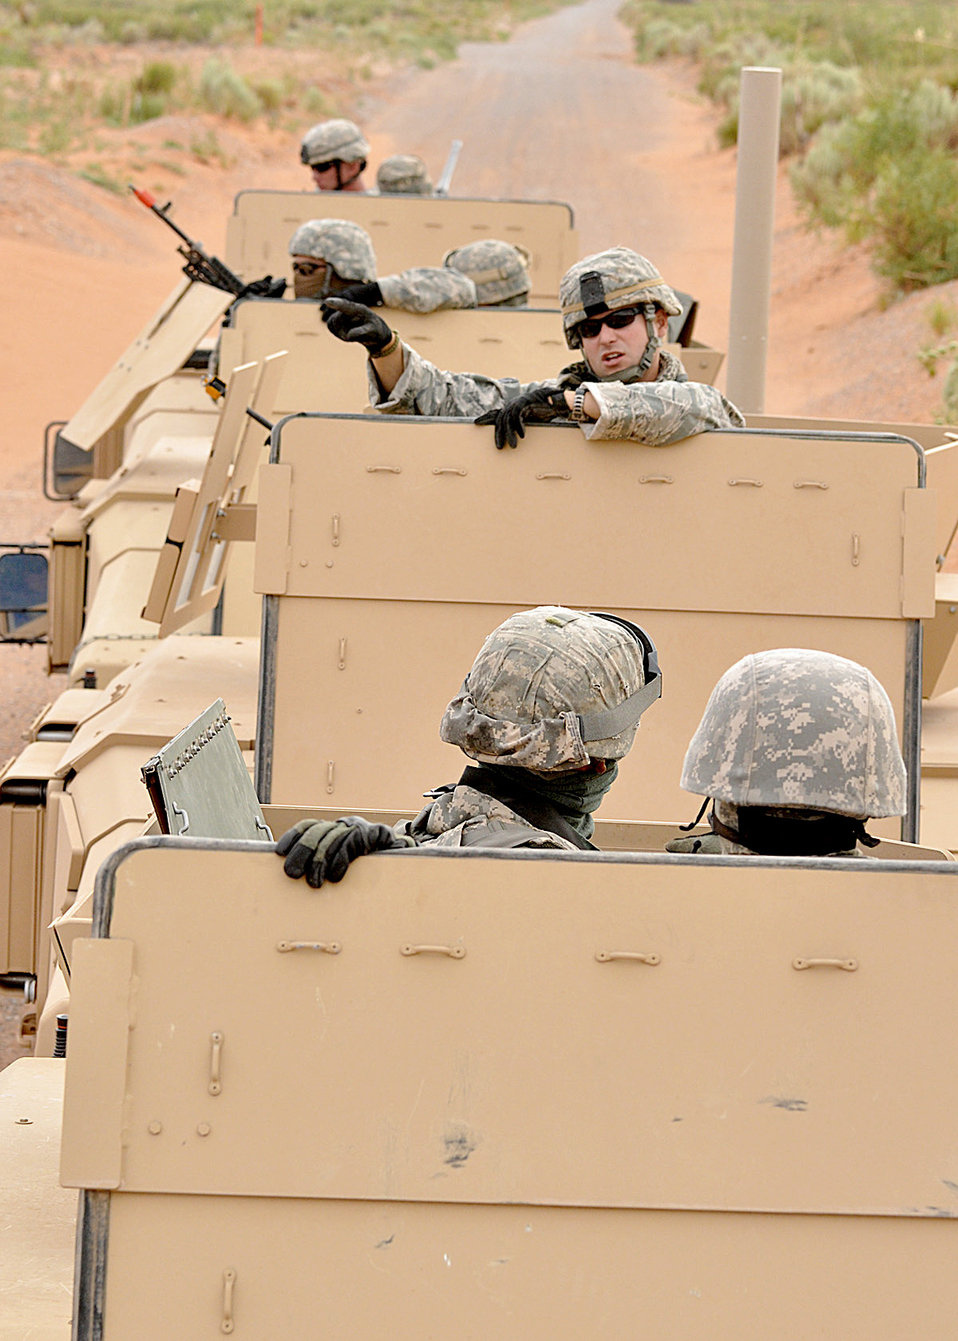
Texas Air Guard

Staff Sgt. Ryan Deane talks with security forces Airmen during a convoy live fire exercise June 30, 2010, on a range in New Mexico. Sergeant Deane is assigned as an instructor at the Desert Defender Regional Training Center, which is operated by the Texas Air National Guard's 204th Security Forces Squadron.